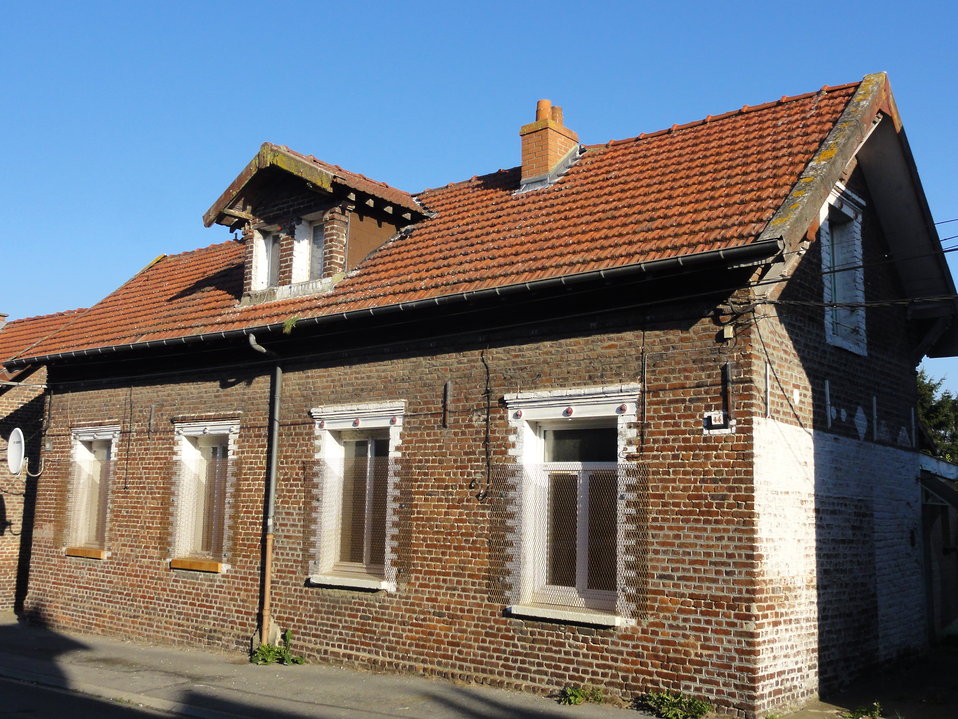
Fran√ßais†: Cit√©s de la Fosse n¬∞ 6 bis - 6 ter de la Compagnie des mines de Marles, Calonne-Ricouart, Pas-de-Calais, Nord-Pas-de-Calais, France.